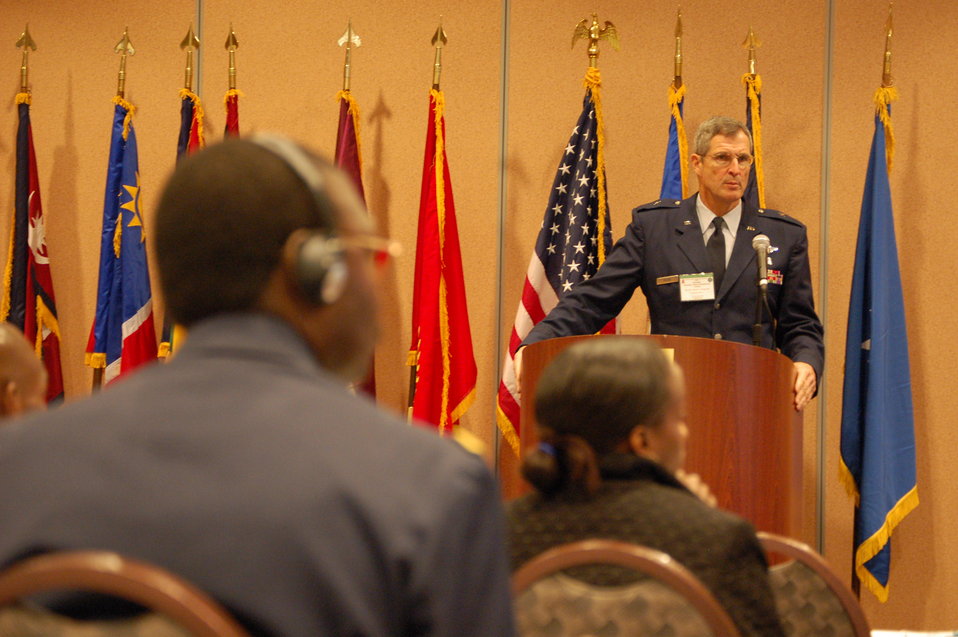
Military healthcare professionals join to combat global AIDS

Brig. Gen. (Dr.) David Young, III, commander of the 59th Medical Wing at Lackland Air Force Base, Texas, addresses military healthcare professionals from around the world during the sixth annual HIV/AIDS Strategic Planning and Policy Development course held in San Antonio. The course is designed to help senior military leaders from various nations develop and implement effective HIV/AIDS prevention strategies in their countries.